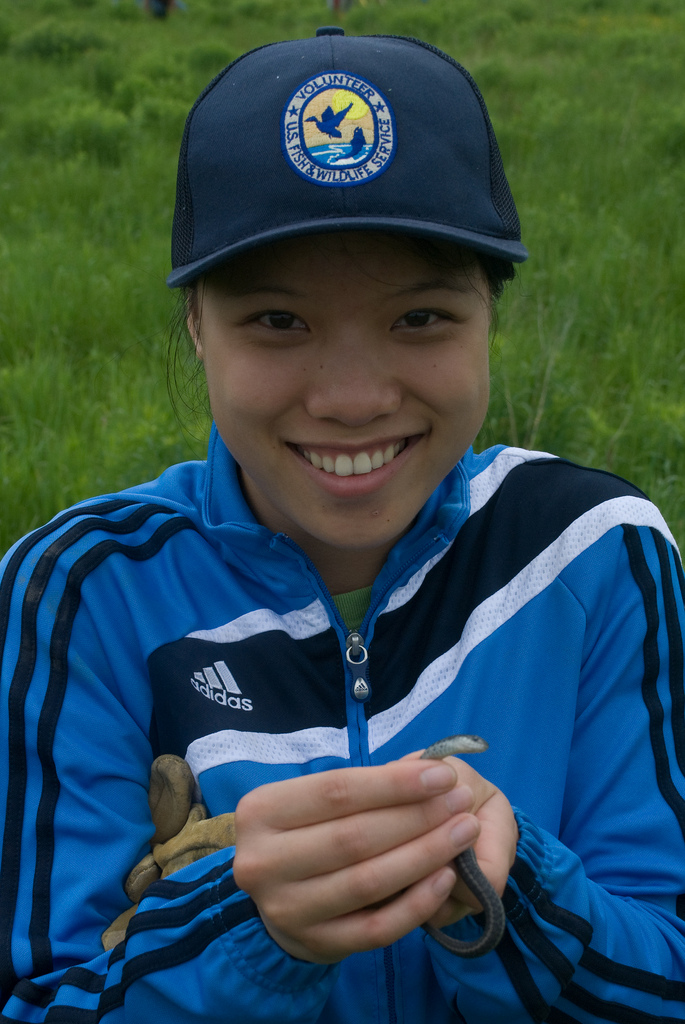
Career Discovery Intern doing field work

U.S. Fish and Wildlife Service